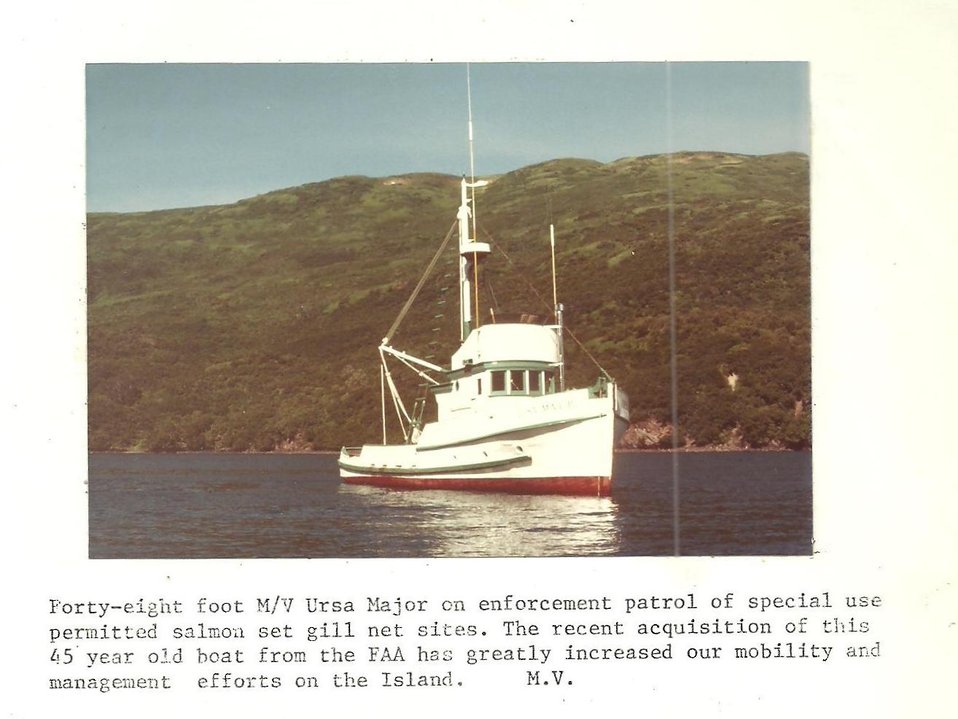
(1979) Ursa Major

Credit: USFWS

Source and Contact: Kodiak National Wildlife Refuge